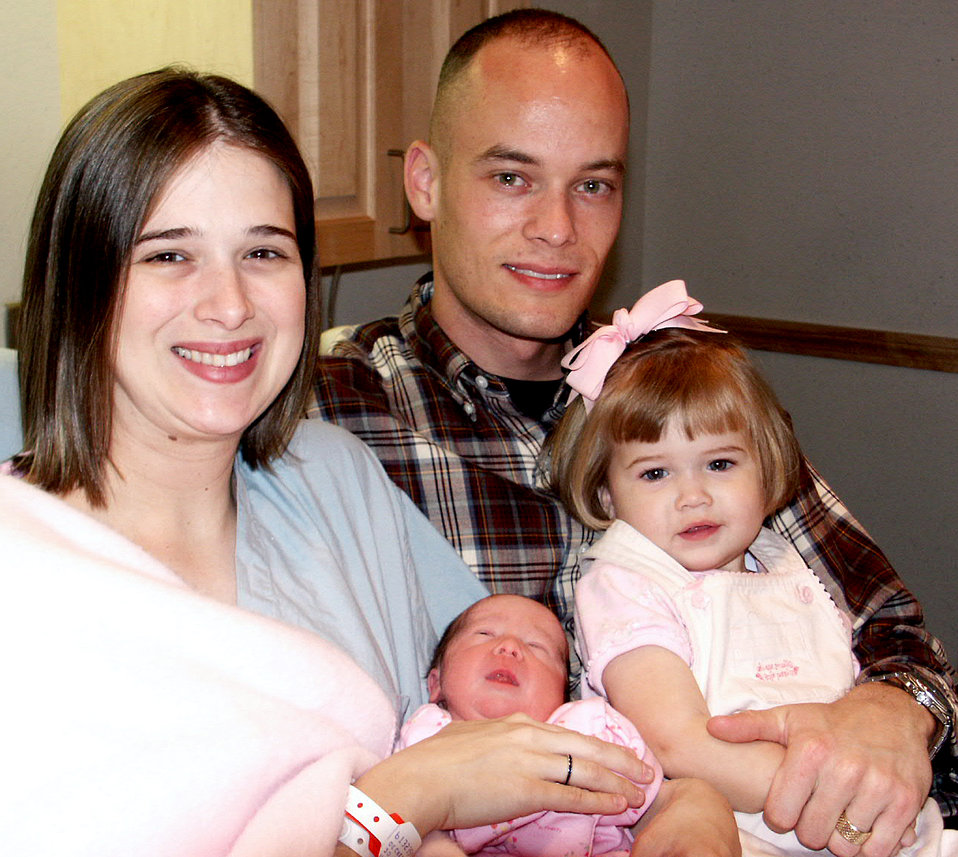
Miracle baby

LACKLAND AIR FORCE BASE, Texas -- Jessica, Mary, Rachel and Brent Decker pose for a family picture in Wilford Hall's birth center at Lackland Air Force Base, Texas. Mary was born Jan. 30 -- healthy -- despite being given a 1 percent chance of surviving in the womb.